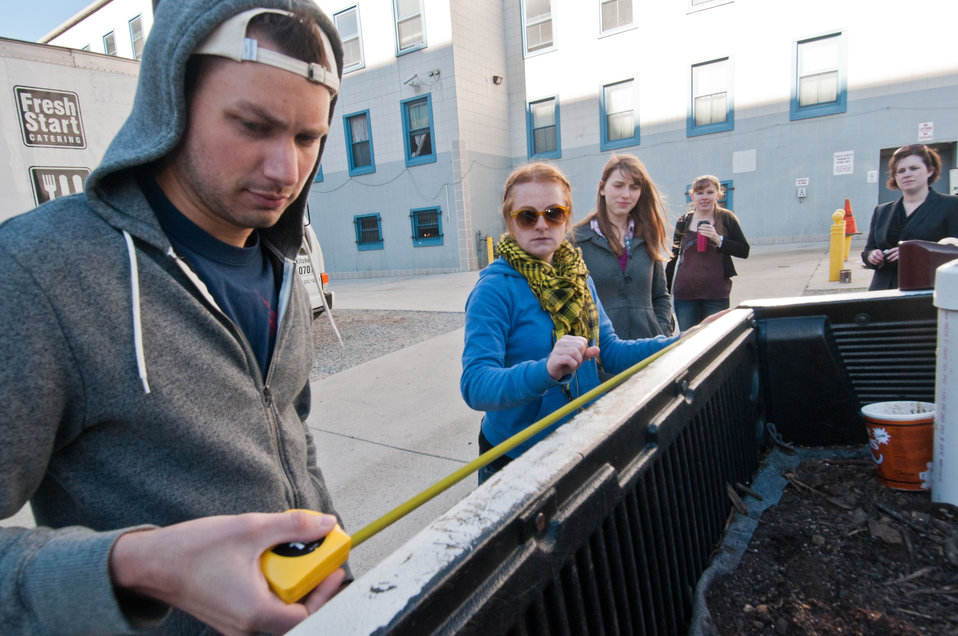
D.C. Central Kitchen’s “The Campus Kitchens Project’s” Matt Schnarr measures the width of the Truck Farm’s truck bed during a chilly morning start in Washington, D.C., on Friday April 6, 2012. The measurement will be used to setup a string grid to help the Truck Farm workers identify the 25 specific areas to plant seeds and seedlings. This Truck Farm is a D.C. Central Kitchen and U.S. Department of Agriculture People’s Garden Initiative partnership that, like other Truck Farms around the country, will travel around the city to schools and community sites, teaching children about healthy eating and where their food comes from through the garden display in its truck-bed. Along with other local donors, the People’s Garden Initiative supports this “edible exhibit” by providing seedlings and educational materials. Mr. Schnarr is on staff with D.C. Central Kitchen for one year as part of his year of AmeriCorps VISTA service.